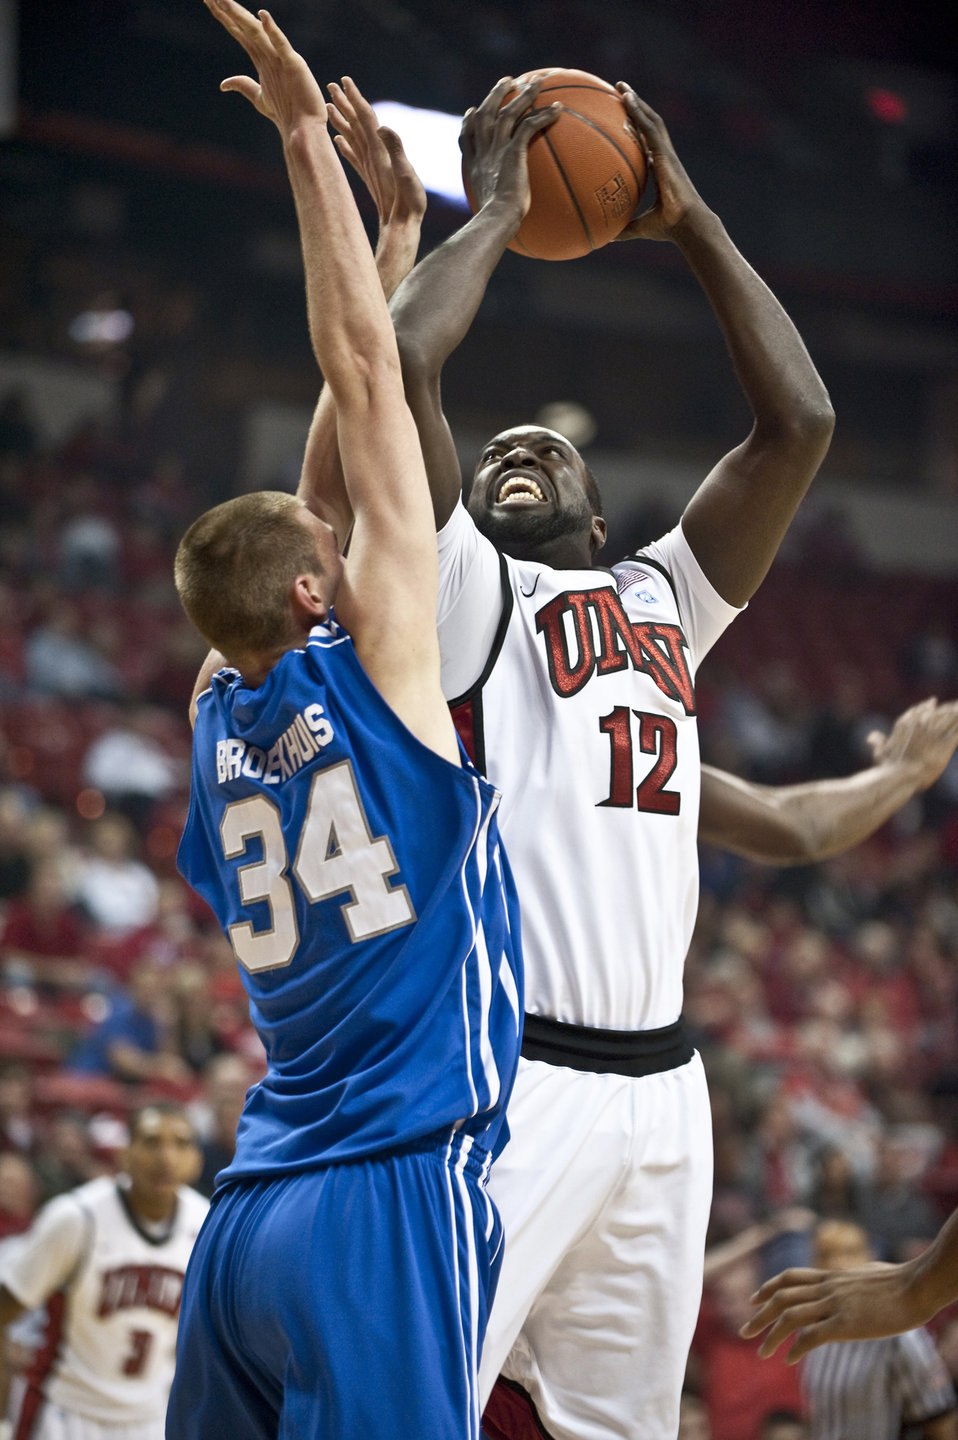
Falcons versus Rebels

Falcons sophomore center Taylor Broekhuis plays defense against Runnin' Rebel Brice Massamba Feb. 15, 2011, at the Thomas and Mac Center, Las Vegas, Nev. The Air Force Falcons came up short against UNLV 49-42, making their record 13-11 overall and 4-7 in the Mountain West Conference.